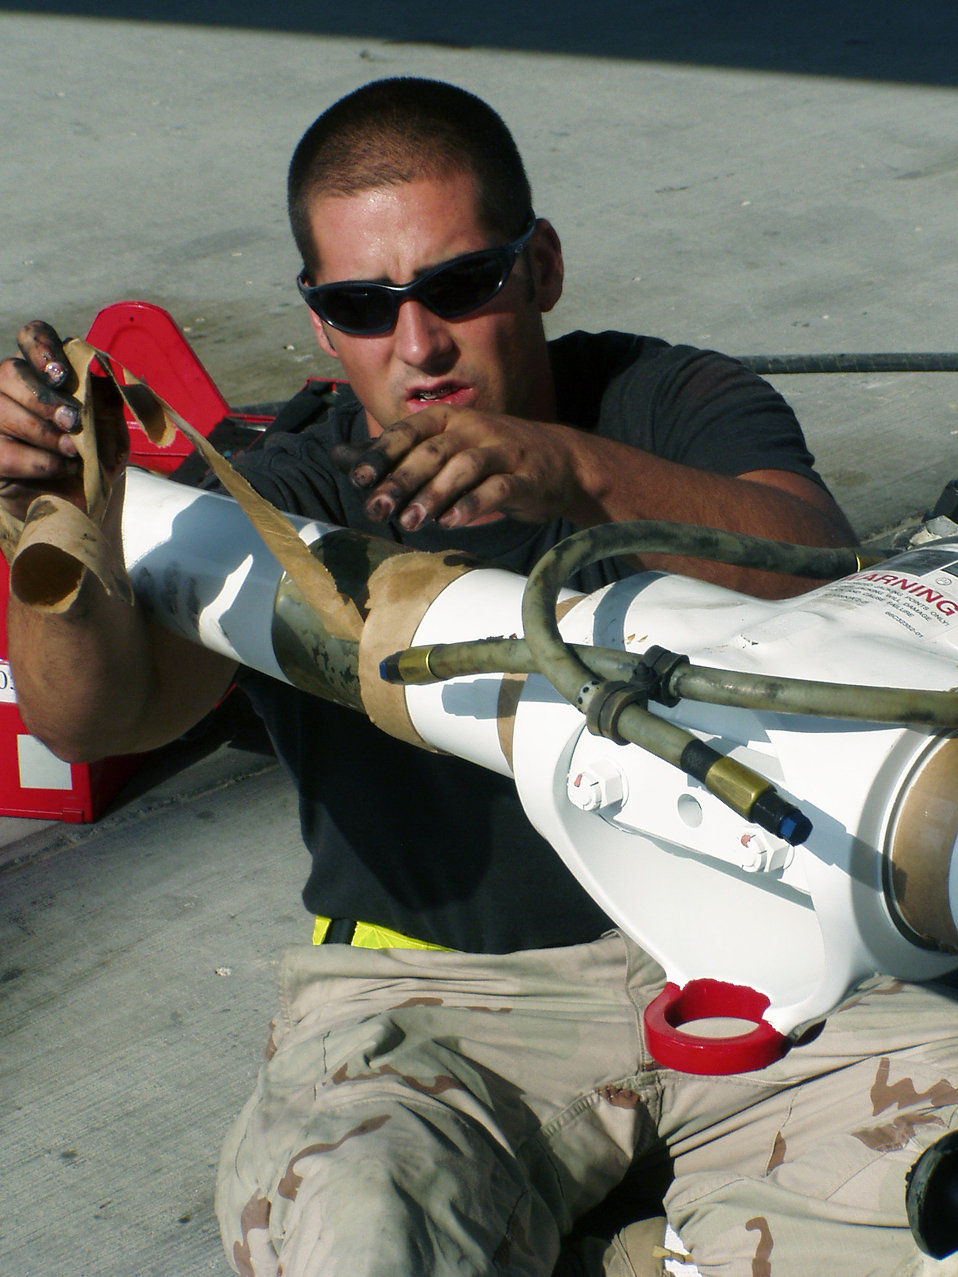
Fix 'er up

SOUTHWEST ASIA -- Airman 1st Class Robbie White replaces a wheel truck aboard a KC-135 Stratotanker at a forward-deployed location. Airman White is deployed from Fairchild Air Force Base, Wash.